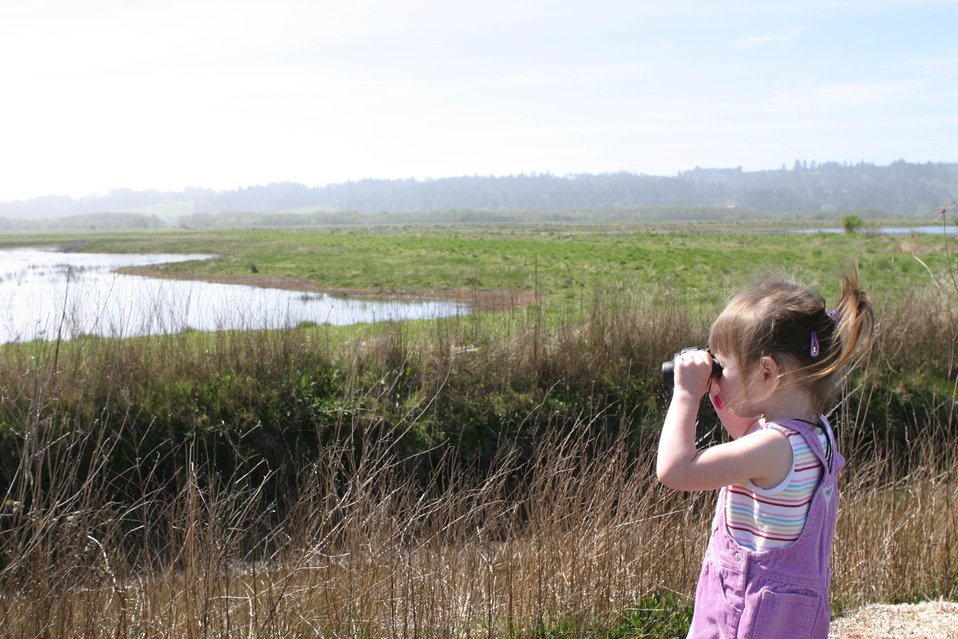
2 yr old birder at Humboldt Bay NWR

Humboldt Bay National Wildlife Refuge is located on Humboldt Bay on the northwest California coast. The refuge has two main purposes: to protect and enhance wetlands and bay habitats for migratory birds, especially black brant, and to protect endangered species and their habitats, including the Humboldt Bay wallflower.